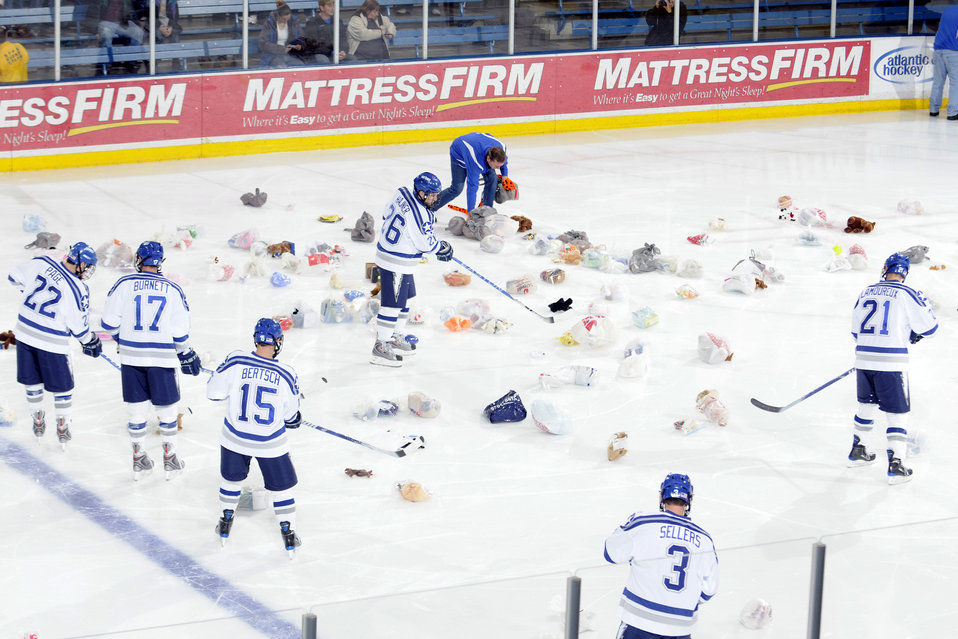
A toy trick, not a hat trick

U.S. Air Force Academy Falcons begin to collect toys after their first goal during the game against American International College at the Cadet Ice Arena Dec. 5, 2009. This is the 10th year where fans throw toys onto the ice after the Falcon's first score. The toys are given to children in local hospitals and clinics during the holiday season. During the past nine years the team has distributed more than 5,000 toys. The Air Force collected a victory, defeating AIC 6-2.